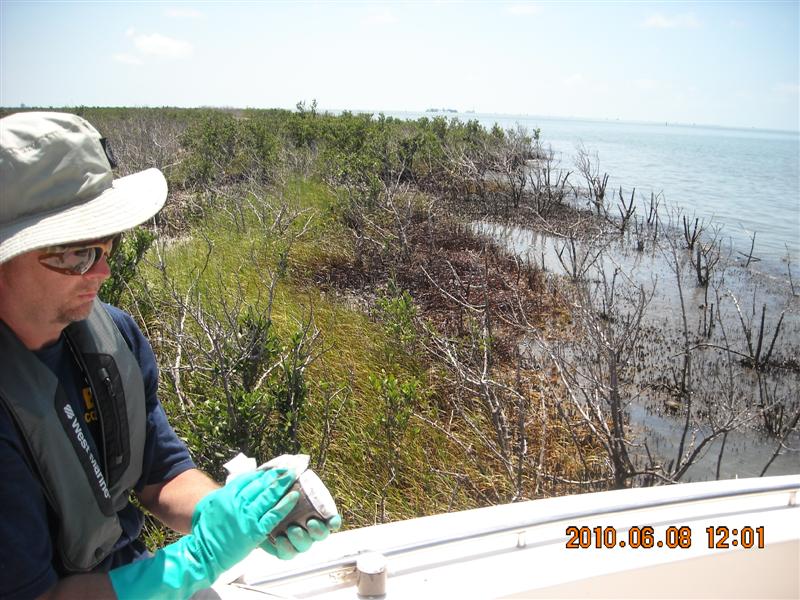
Sampling in the affected area - oil stained equipment